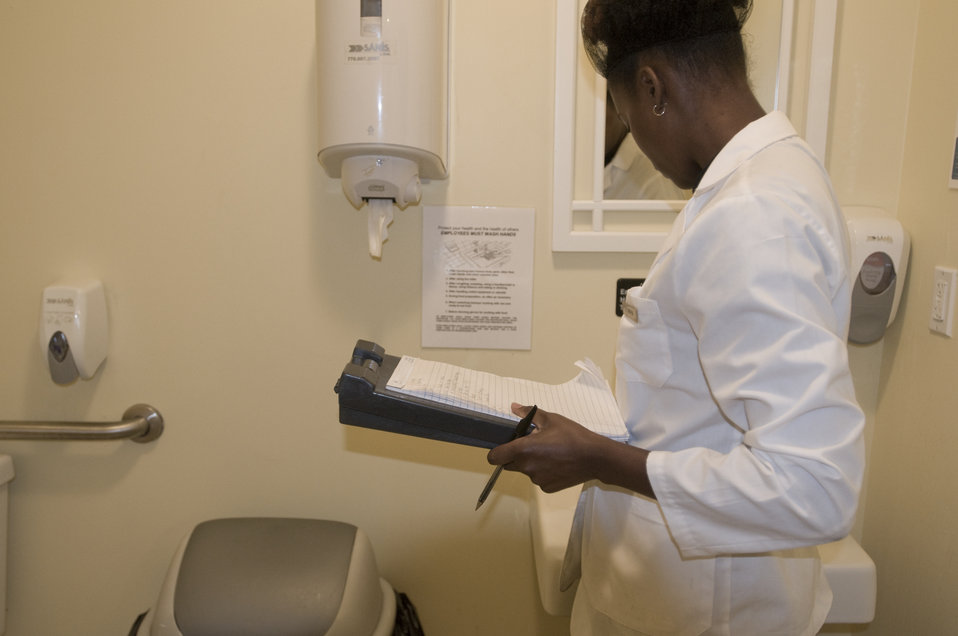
At this point of her restaurant inspection, this state-appointed public health inspector had finished gathering her findings in the kitchen local and had moved on to inspect the the restaurant's bathroom facilities.